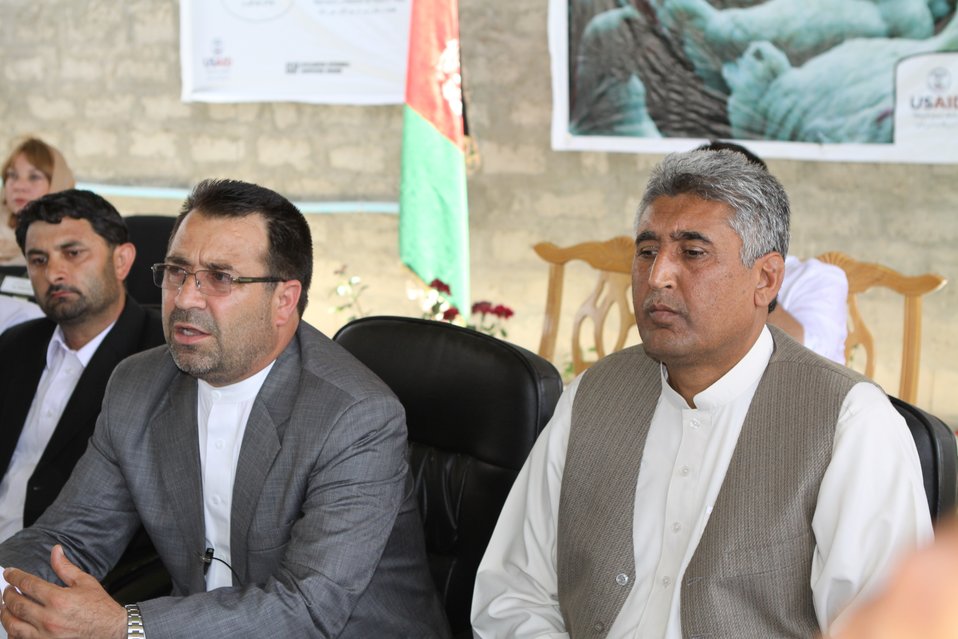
Bolan Poultry Farm